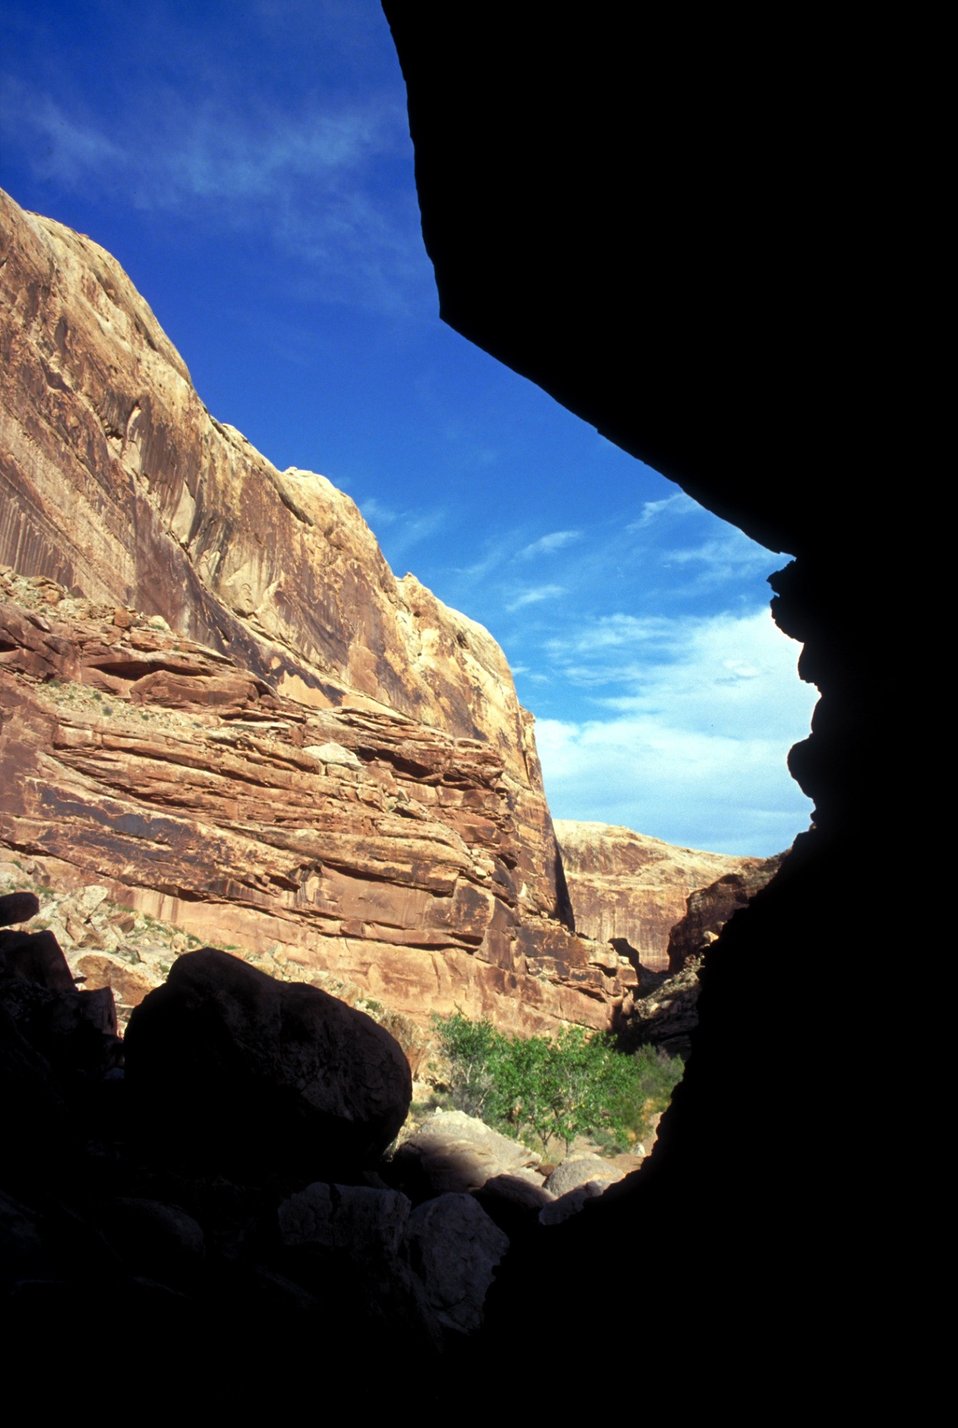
Black Dragon Wash near Green River, Utah.